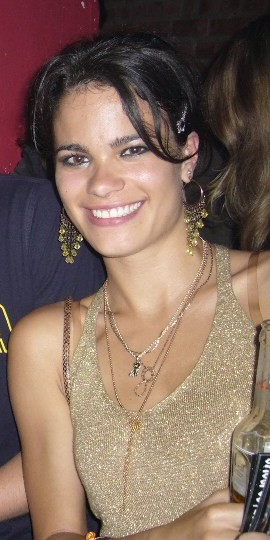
Deutsch: Dani Wecker